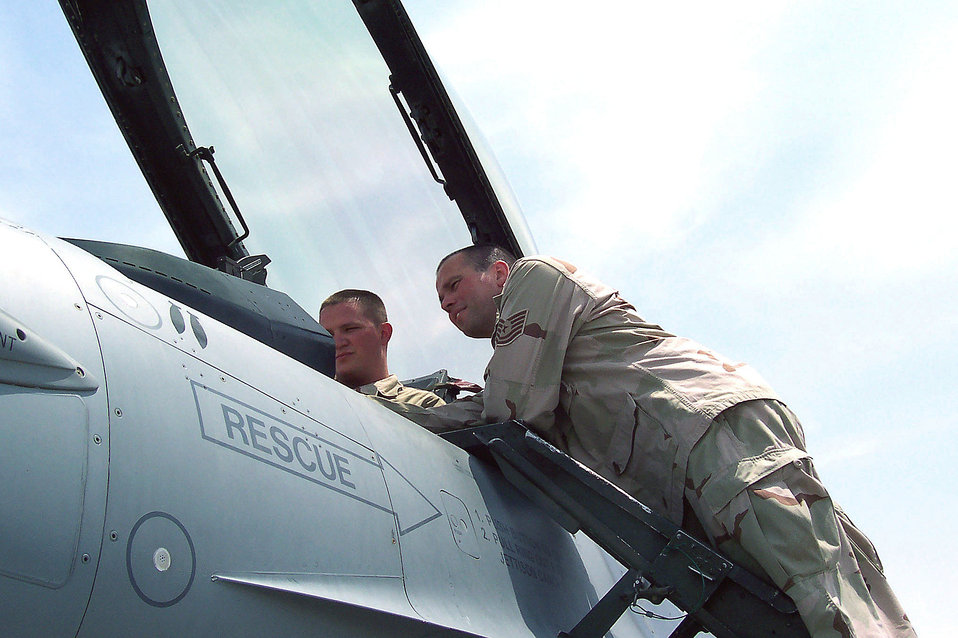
The troubleshooter

SOUTHWEST ASIA -- Tech. Sgt. James Kehoe (right) troubleshoots a discrepancy on an F-16C Fighting Falcon with his son, Senior Airman Travis Kehoe. They are Airmen with the Vermont Air National Guard's 158th Fighter Wing. The memory of Marine Cpl. Mark Evnin, a family friend who was killed in action last year, is what puts the fire in their fight.